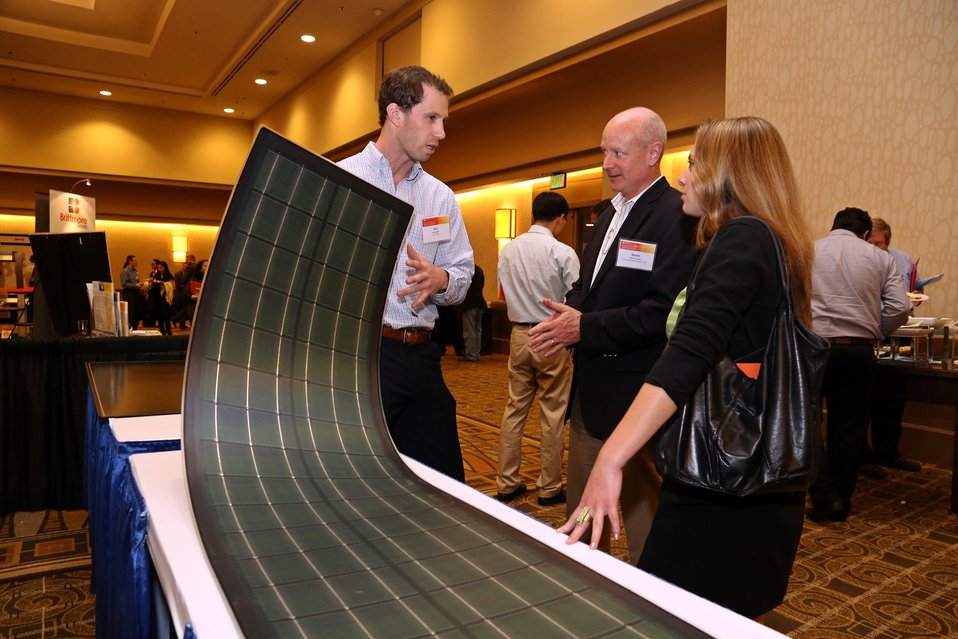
Tech Forum 6

Awardees display their technology at the Tech Forum.